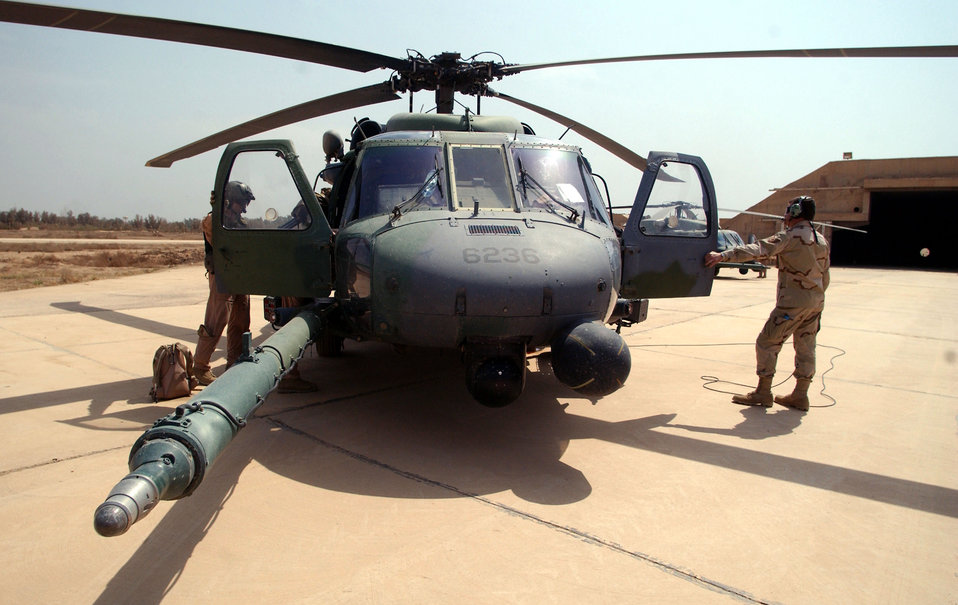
Preflight check

OPERATION IRAQI FREEDOM -- A HH-60G Pave Hawk flight crew performs preflight checks on their helicopter prior to a mission over Baghdad on April 24, 2003. The Combat Search and Rescue crew is currently assigned to Baghdad International Airport in support of Operation Iraqi Freedom. Baghdad International Airport is a primary base of operations for U.S. troops, cargo and humanitarian airlift for Operation Iraqi Freedom.